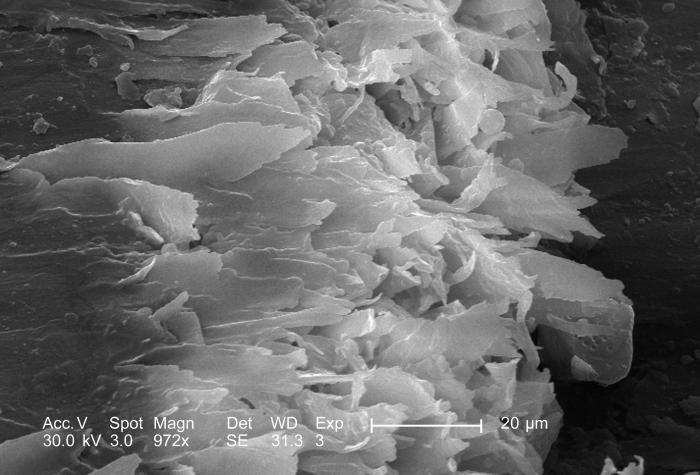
This 2005 scanning electron micrograph (SEM) depicts the morphological characteristics seen on the surface of a domesticated cat's, Felis domesticus, claw; Magnified 972x. Note the flakey appearance of the claw's lamellar, or layered configuration. The cat's needle-sharp claws are highly specialized structures specifically designed for grasping prey, and assisting in exercises that demand a great degree of traction such as climbing trees, running, and even grooming. Its claws are retractable, which allows the animal to pull the structures back into the skin of its paws, thereby, reducing the degree of daily wear and tear. This claw nail was found in the home of a cat owner after having been sloughed off of the paw of a house cat in the course of his everyday activities.